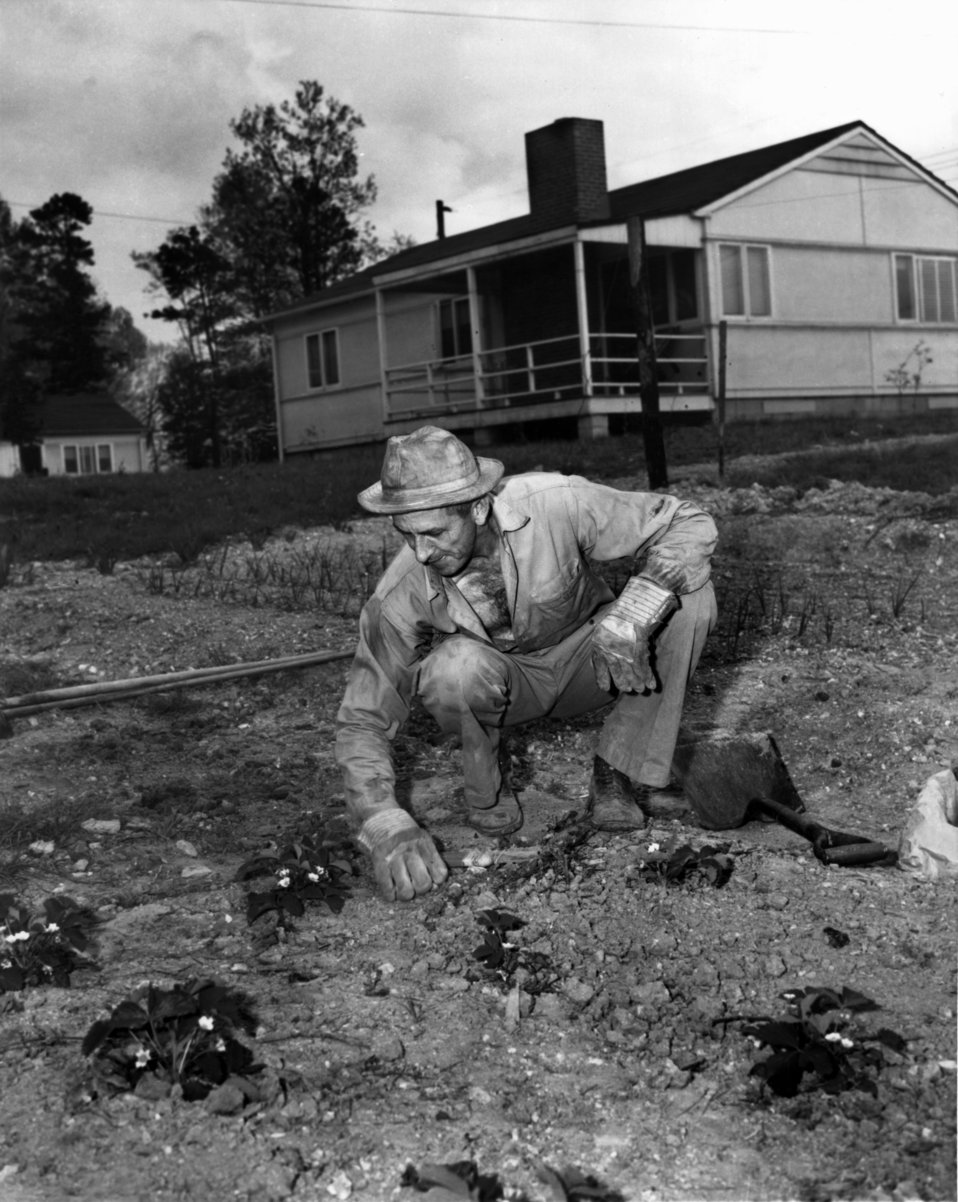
Victory Garden Oak Ridge

pro 416 DOE photo Ed Westcott 3/1945 Oak Ridge Tennessee